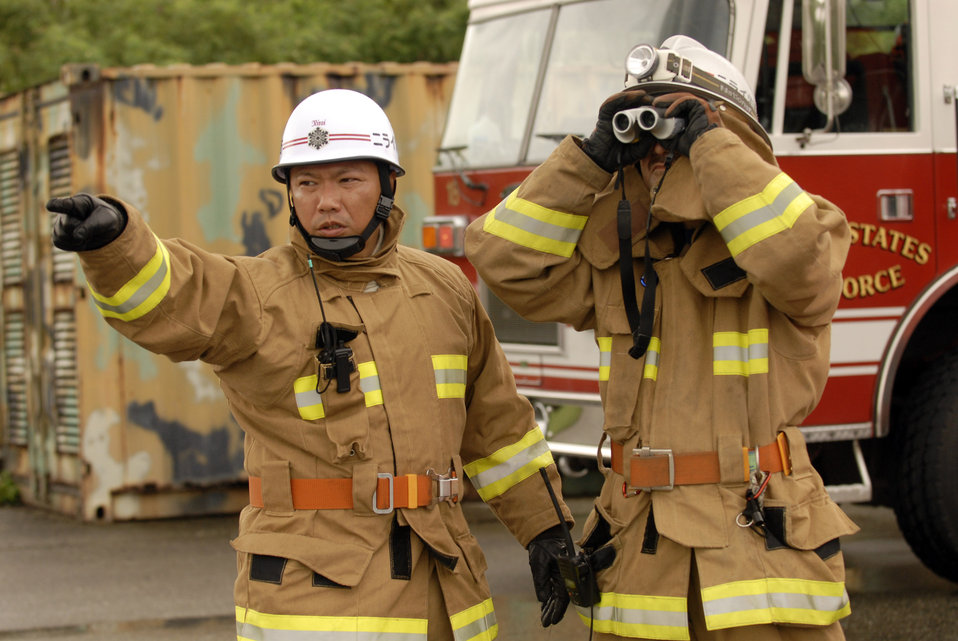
Joint emergency response training

Hiroshi Zukeran and Masahiko Miyagi observe operations involving a simulated hazardous chemical spill during joint training at Kadena Air Base, Japan, on July 14. The training, conducted by firefighters from the 18th Civil Engineer Squadron and Nirai Fire Department, helps the organizations understand each other's capabilities when responding to an off-base incident. The Nirai Fire Department covers Kadena-Town and Yomitan-Village, which surround the base.